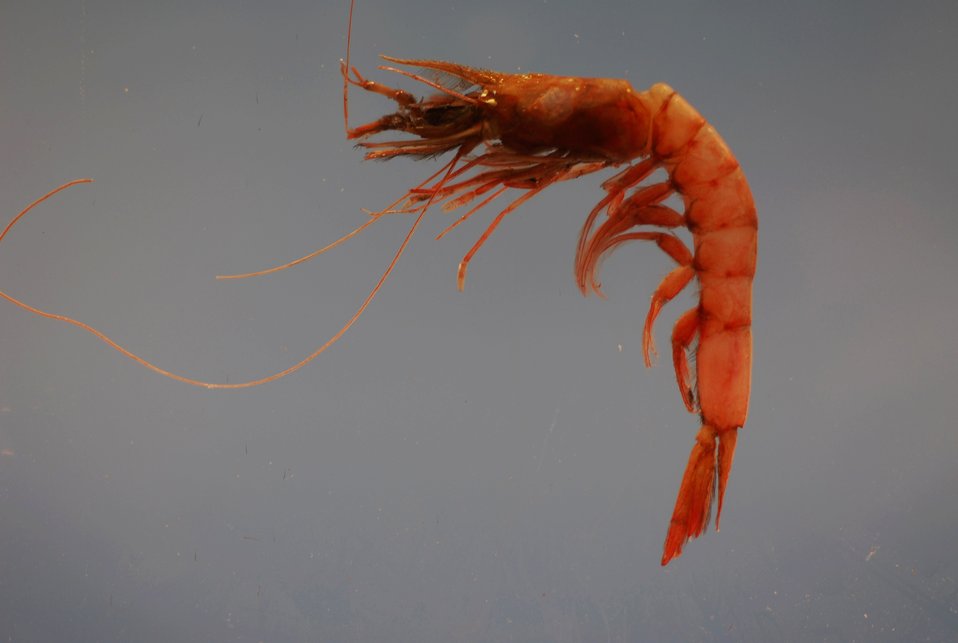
Megalops or pinkspeckled shrimp ( Penaeopsis serrata)